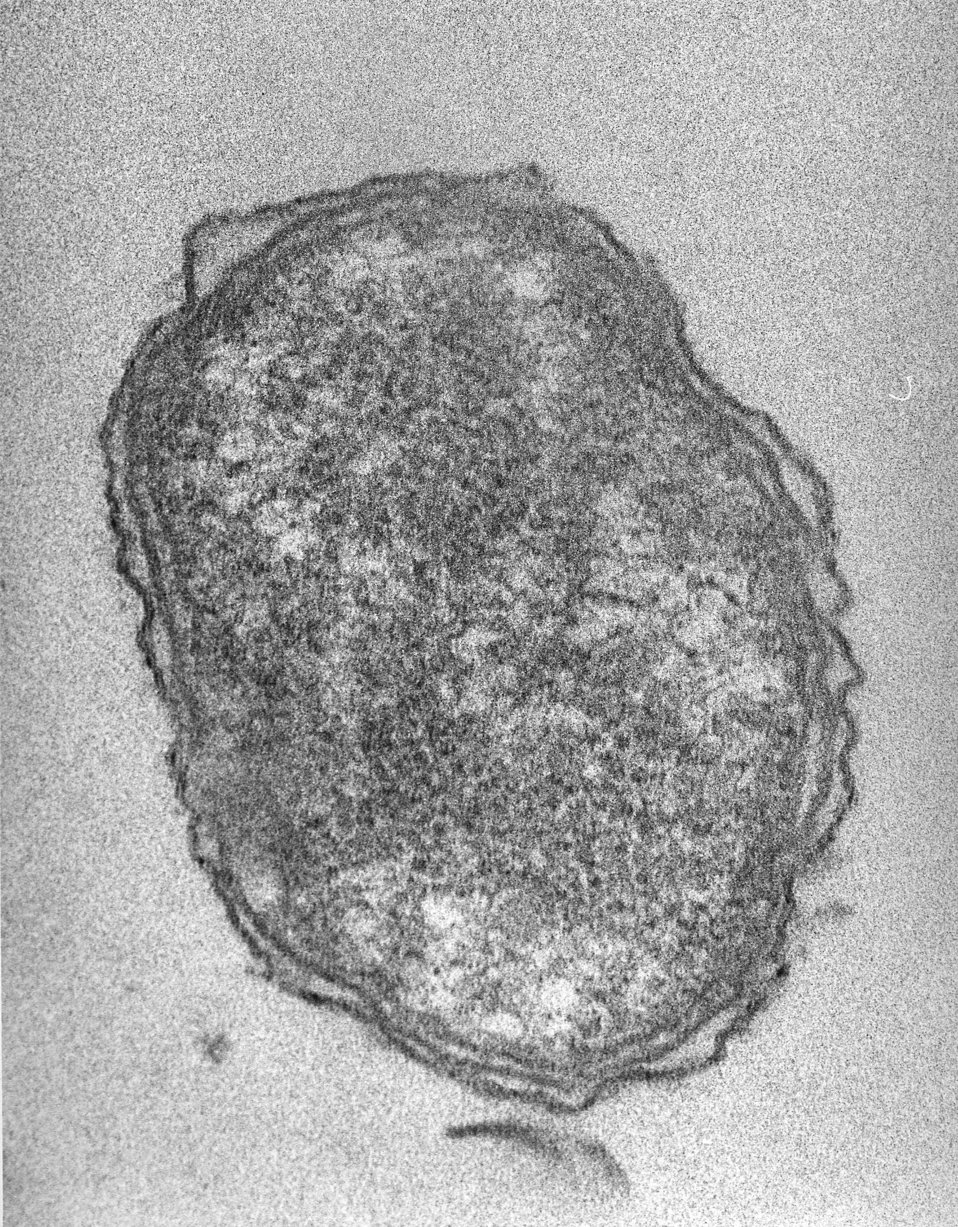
This 1976 transmission electron micrograph (TEM) depicted an extracellular Orientia tsutsugamushi rickettsial micro-organism, covered with a distinct third outer membrane of probable host mesothelial cell origin. The specimen from which this image was obtained, was extracted from the peritoneal cavity of experimentally infected mouse.